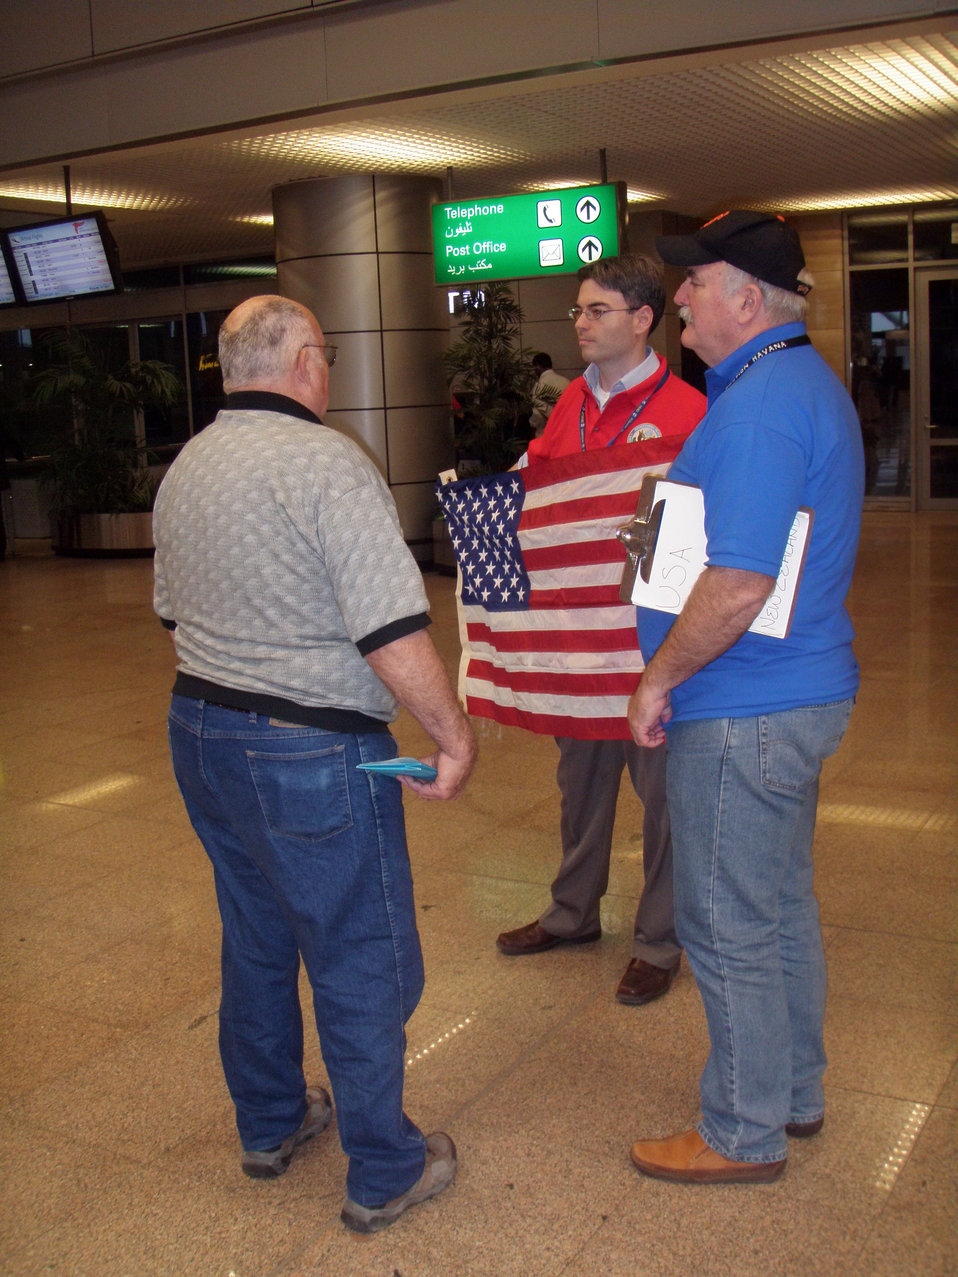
Chief Consul Buckley and Chief Consul Hammaker Speak With an American

Embassy Riga Chief Consul Tim Buckley, center, and Embassy Dhaka Chief Consul Bill Hammaker, right, who are temporarily serving in Cairo, speak with an American citizen at the Cairo International Airport in Egypt on February 7, 2011.